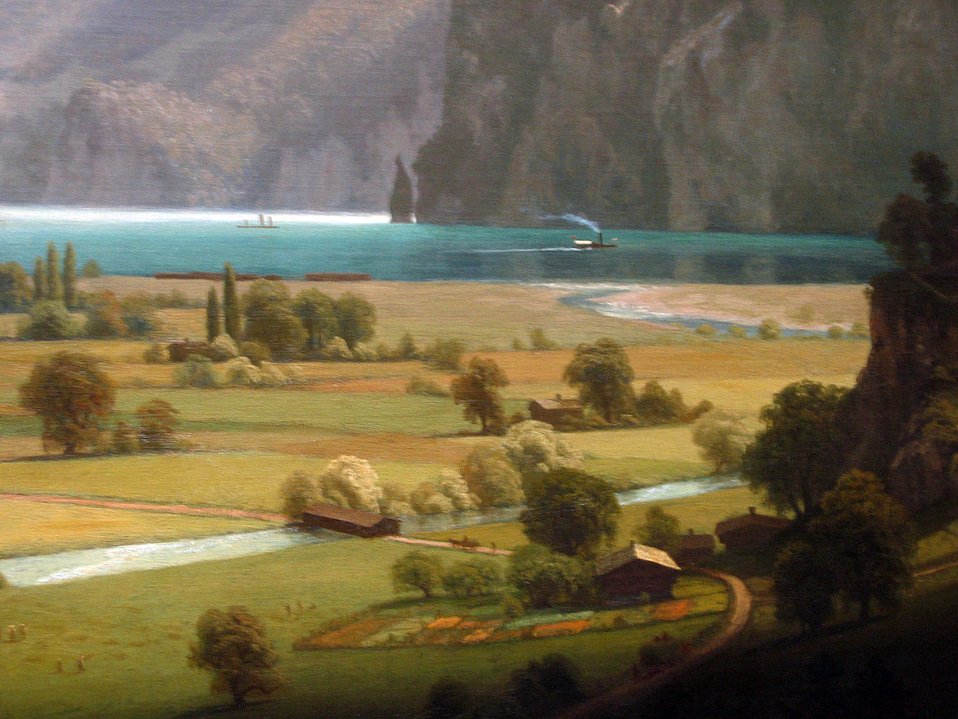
Bierstadt LakeLucerne 1858 closeup1